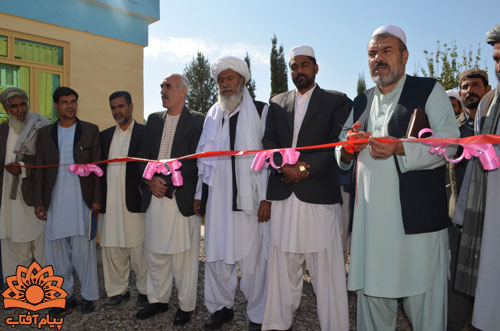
Farah province

SIKA-W Farah grant funded light infrastructure projects. This event was led by our DRRD and IDLG partners, with support provided by SIKA-W.